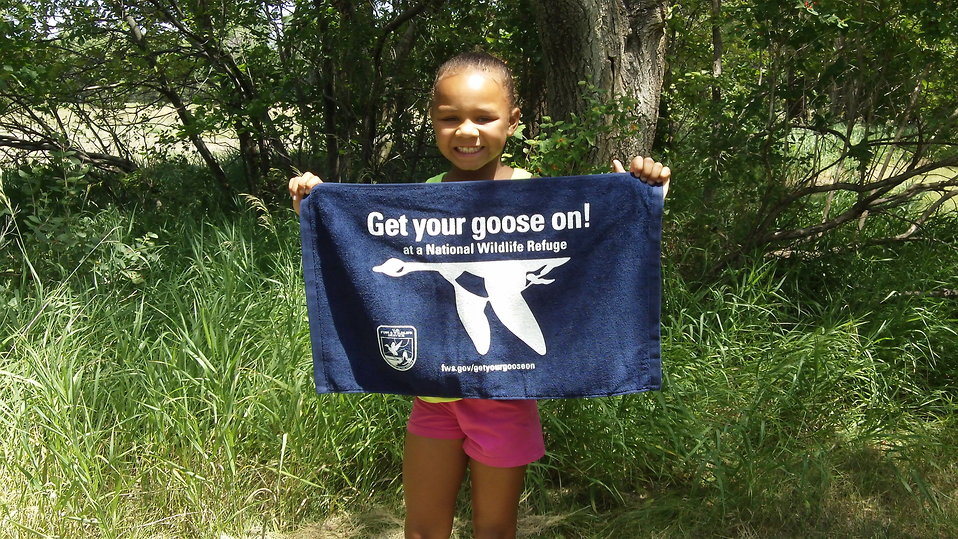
Get Your Goose On!

Photo taken at Huron Wetland Management District in east-central South Dakota.